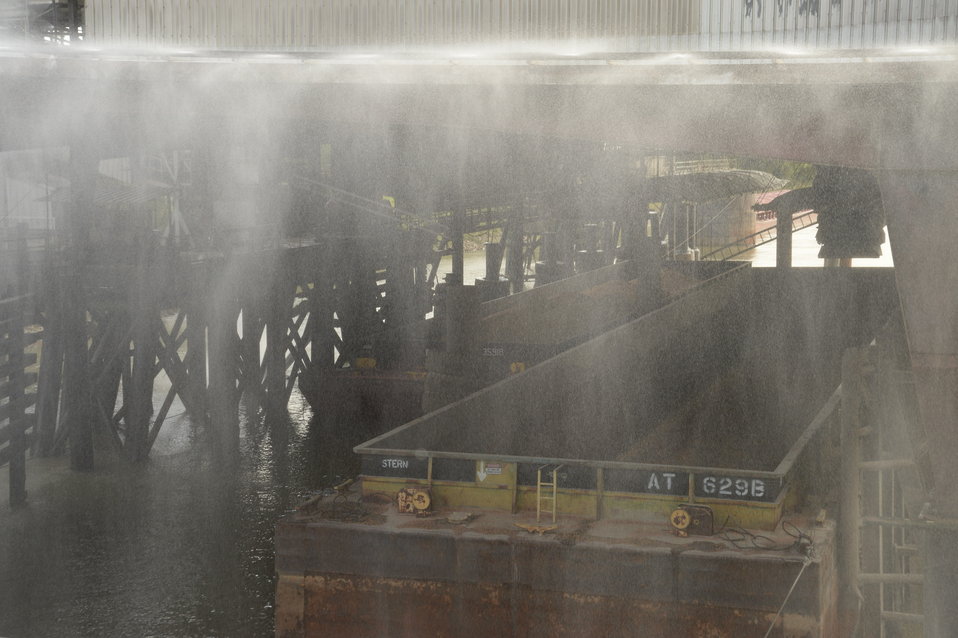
U.S. Department of Agriculture (USDA) Grain Inspection, Packers and Stockyards Administration (GIPSA) Federal Grain Inspection Service (FGIS) grain stations are washed down to cleanse loading and unloading areas and to prevent grain dust buildup near the Port of New Orleans in New Orleans, LA on Tuesday, Nov. 19, 2013.